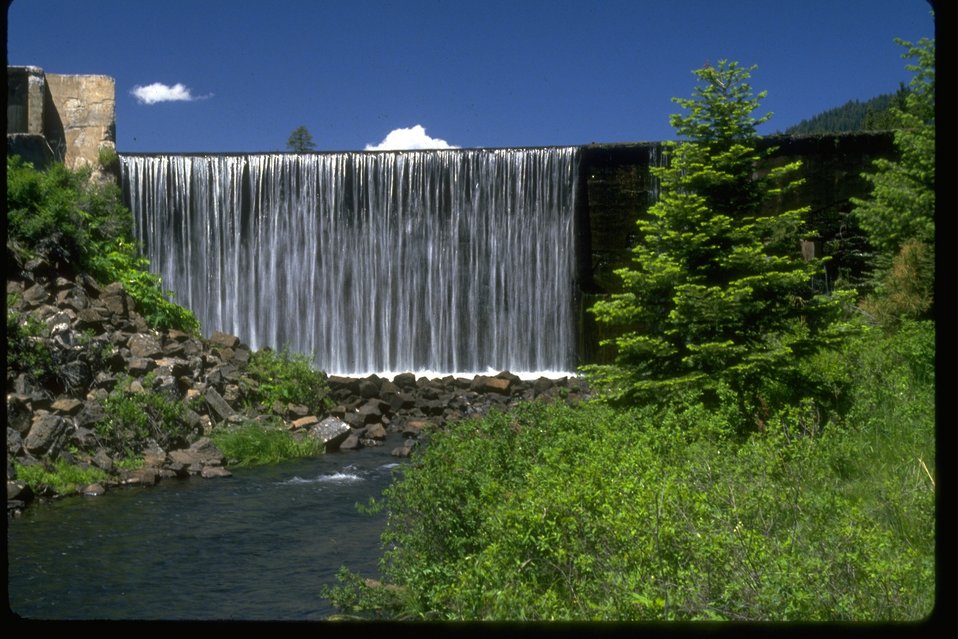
Water flows over the top of the Little Hyatt Dam.